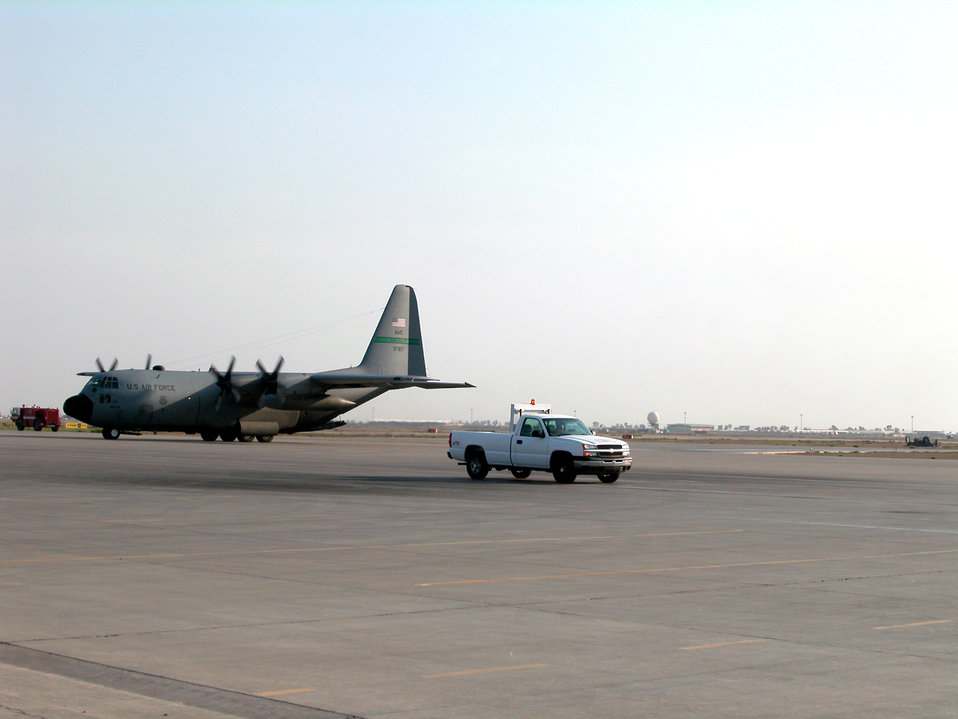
Transient alert maintainers provide critical mission support

One of the more visible signs of transient alert maintenance people on the flightline here are the